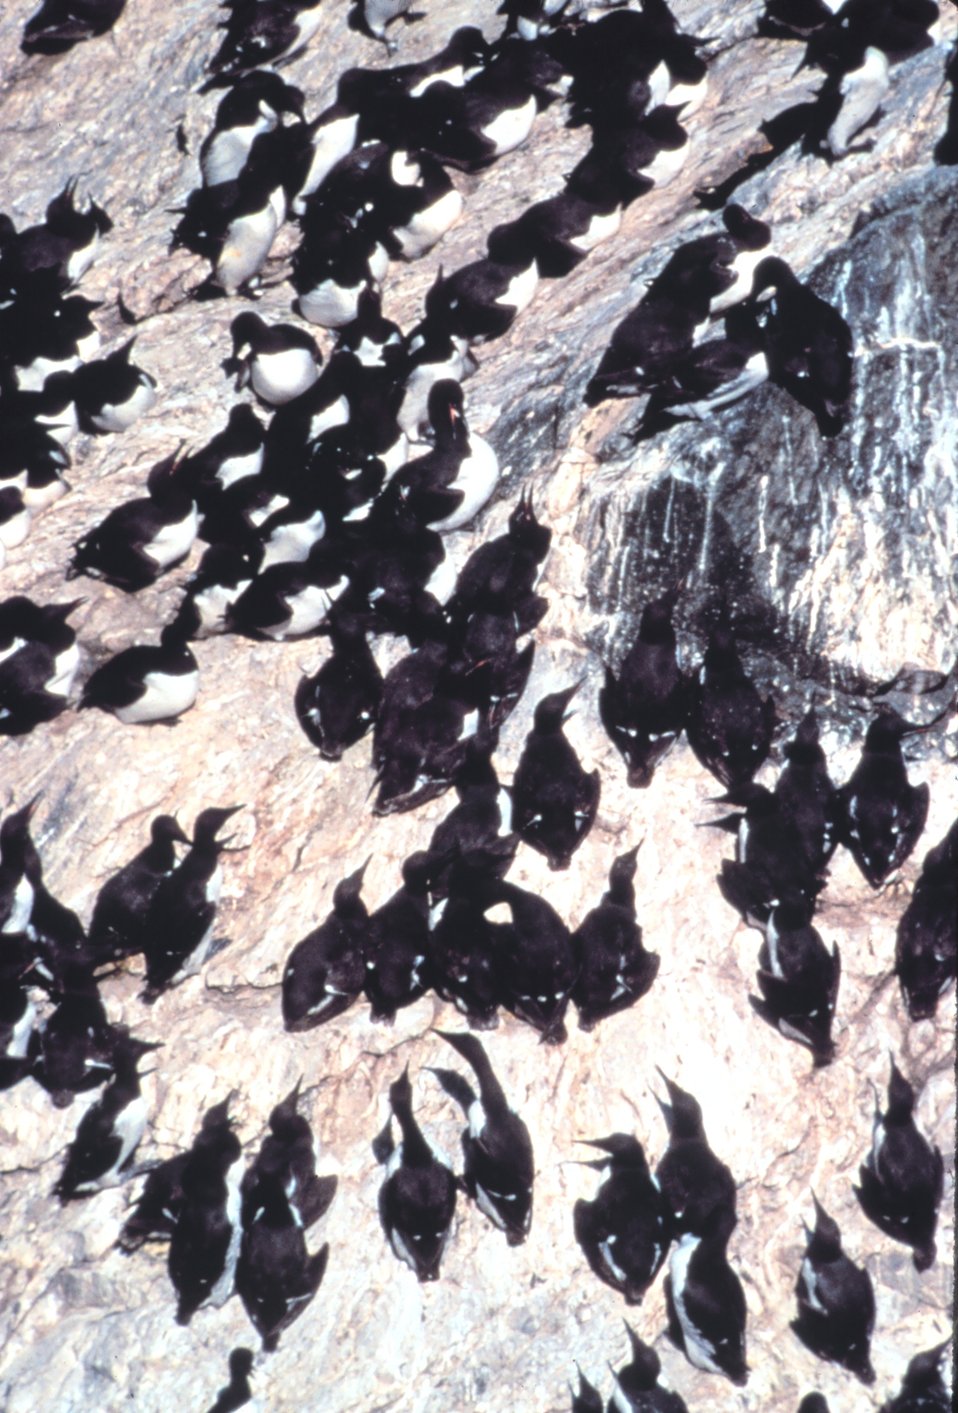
Murre colony